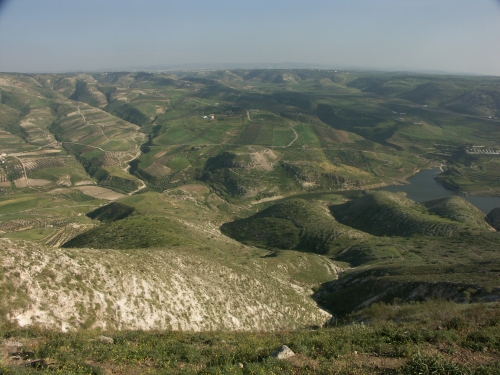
Deutsch: Ausgrabungen im Sommer 2007 am Tall Zira´a - Ausgrabung des BAI Wuppertal und DEI Jerusalem Amman; siehe www.deiahl.de und www.bainst.de